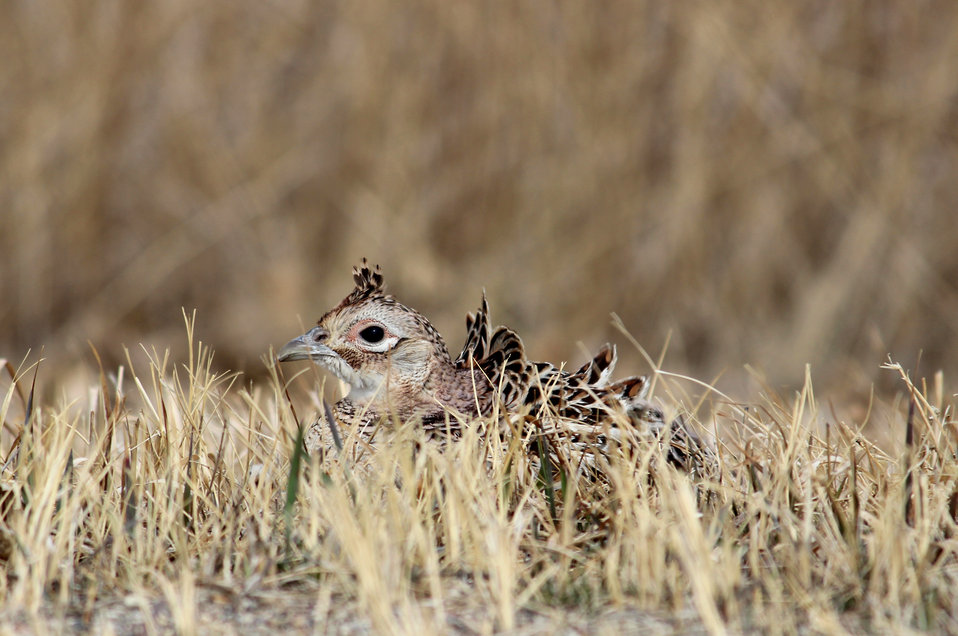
A Windy Hairdo

This female (hen) ring-necked pheasant sports quite a look. North Dakota is infamous for its wind.